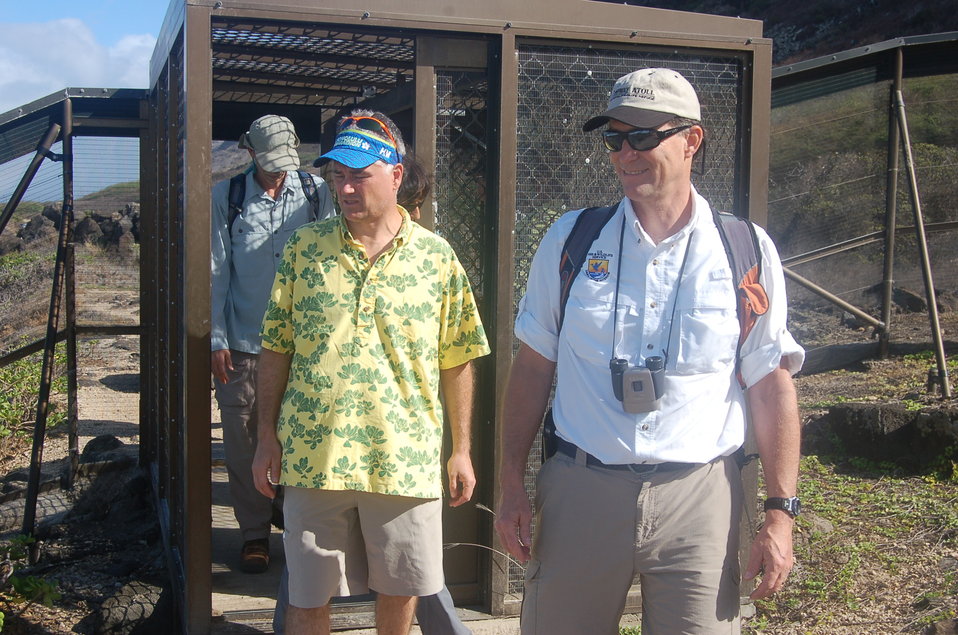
Dan Ashe tours Ka'ena Point State Park in Hawaii

USFWS Director Dan Ashe tours Ka'ene Point State Park in Hawaii.